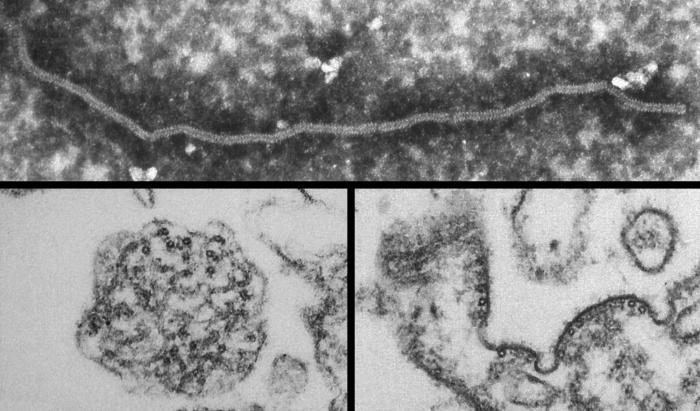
These three transmission electron micrographs (TEM) reveal some of the ultrastructural morphology found in the Nipah virus (NiV). A pleomorphic virus, the image at the top depicts a single long stranded Nipah virion.